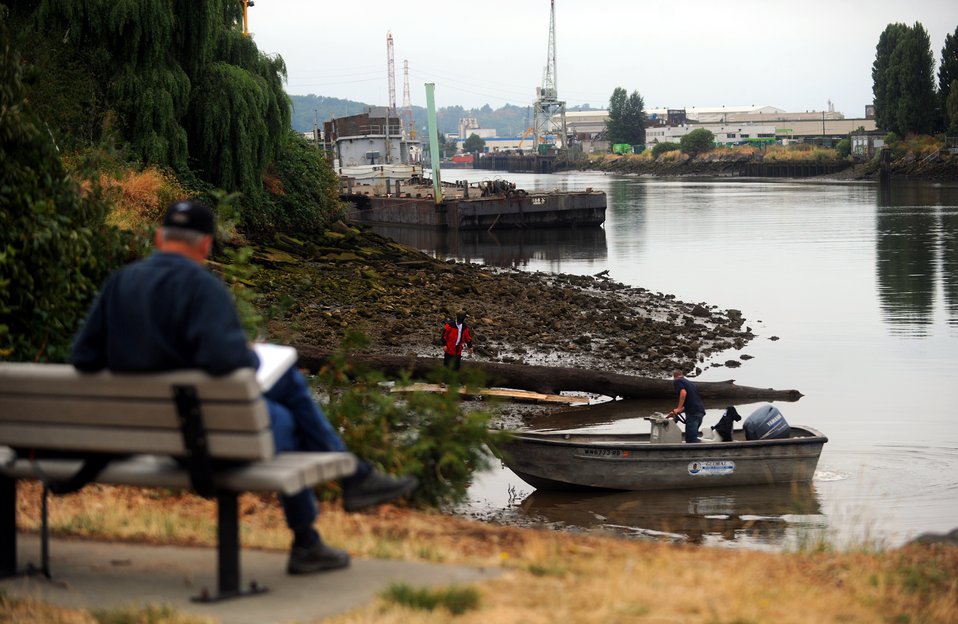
Duwamish Overlook

The Duwamish River is truly an urban resource where a wide range of uses coexist, including industry, boating, fishing, residential, and just relaxing. Due to industrial and stormwater pollution, the lower 5.5 miles of the river was placed on the EPA's Superfund site list in 2001.Visit www.epa.gov/region10/duwamish to learn more about EPA's efforts to clean up and restore the lower Duwamish River.